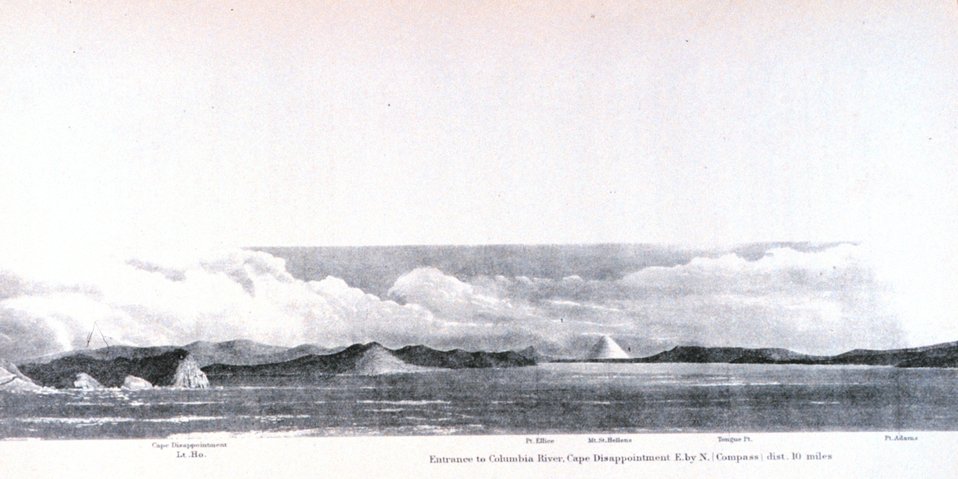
The entrance to the Columbia River with Mount St. Helens seen in the distance. In: Pacific Coast. Coast Pilot of California, Oregon, and Washington Territory . By George Davidson, 1869. P. 146. Library Call Number VK947.D4 1869.